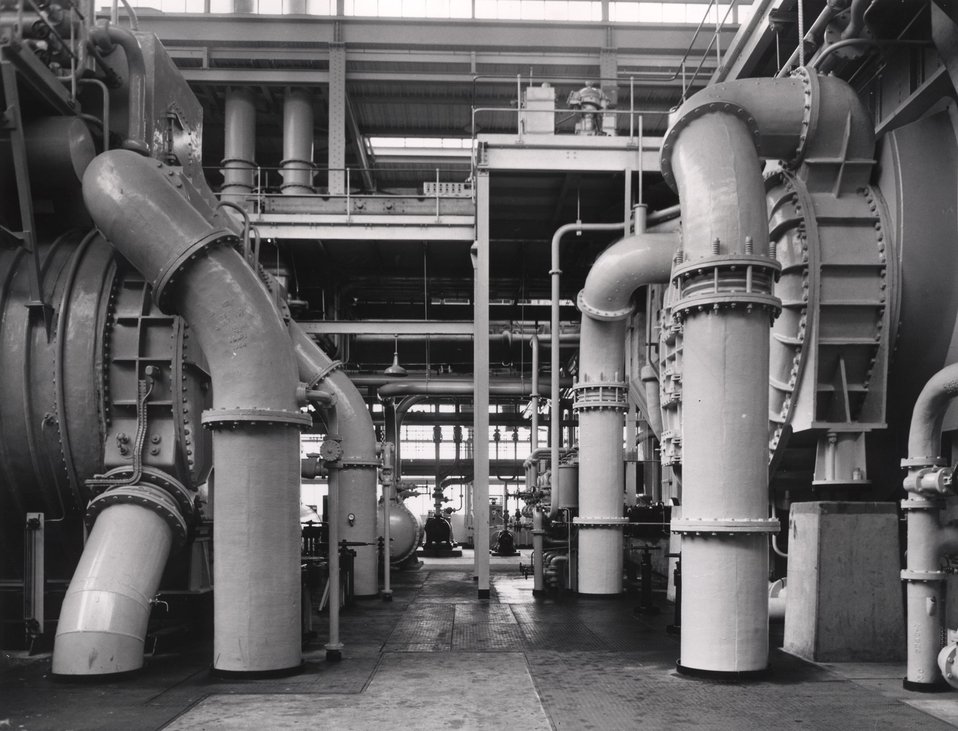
Calder Hall, Cumberland. The basement of the turbine hall of Calder Hall A atomic power station. c. 1956